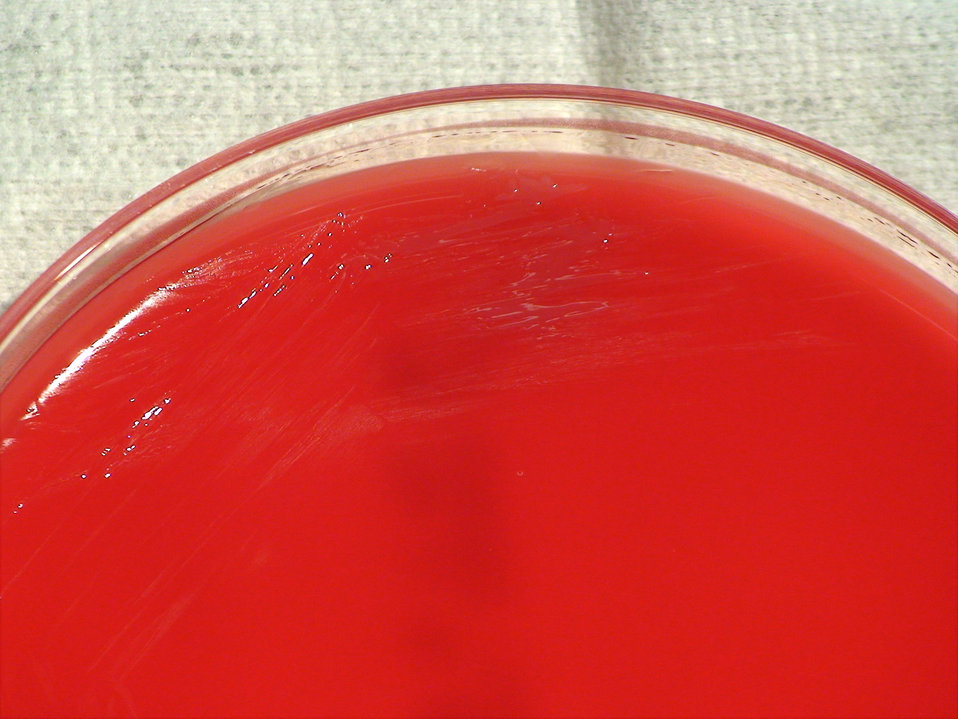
As a closer view of PHIL 12371, this photograph depicts light colonial growth displayed by Gram-negative Brucella abortus bacteria, which was grown on a medium of sheep's blood agar (SBA), for a 24 hour time period, at a temperature of 37�C. Members of this genus, including B. abortus, cause a disease known as brucellosis.